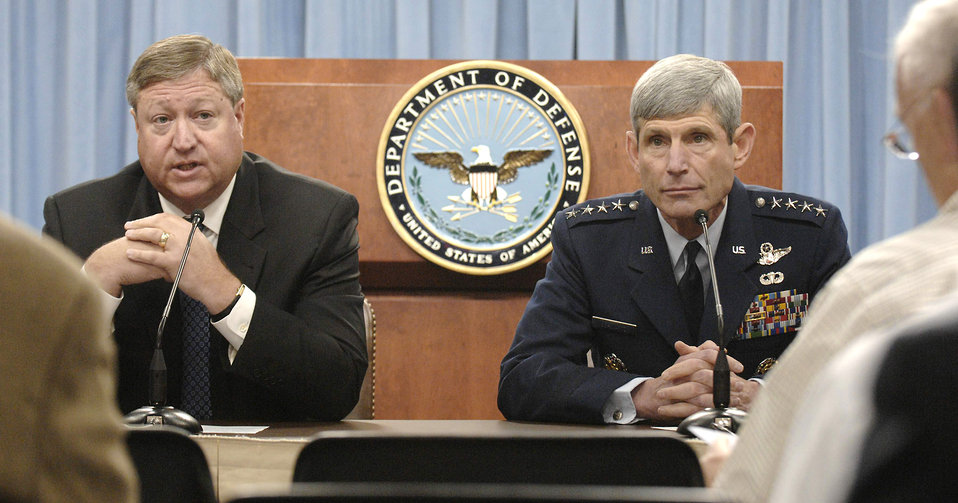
Air Force officials stand up Global Strike Command

Air Force Secretary Michael B. Donley (left) and Air Force Chief of Staff Gen. Norton Schwartz answer questions at an Aug. 5 Pentagon news conference on the Air Force Global Strike Command activation. The new command, with headquarters at Barksdale Air Force Base, La., stands up Aug. 7.